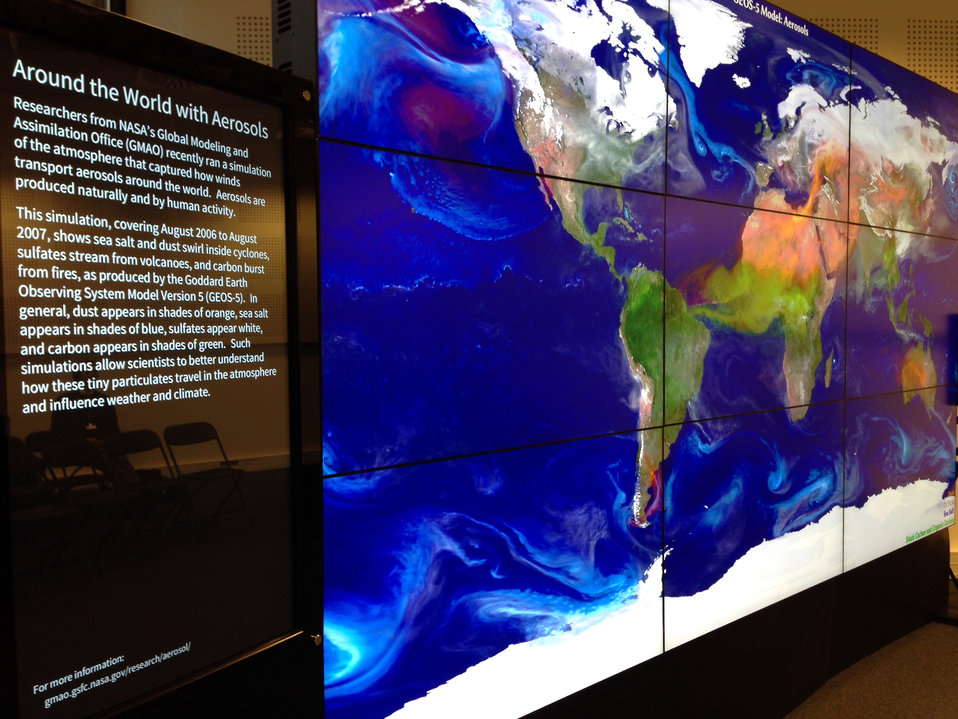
NASA's Doddridge Presents 'Aerosols and Atmospheric Composition'

Bruce Doddridge, scientist at NASA Langley Research Center, presents “Aerosols & Atmospheric Composition” on the NASA Hyperwall at the U.S. Center at the 19th Session of the Conference of the Parties to the UN Framework Convention on Climate Change (COP19) in Warsaw, Poland, on November 18, 2013.